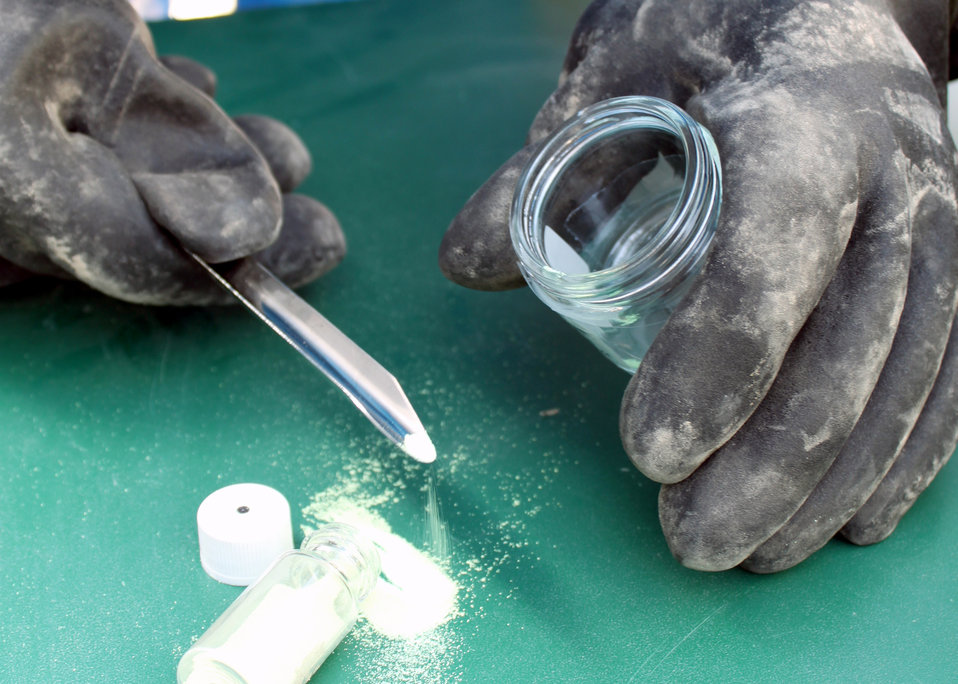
Emergency management

Senior Airman Nathan Krajcirik takes a sample of an unknown powder during training Aug. 3, 2010, at Joint Base Balad, Iraq. Different powders, pastes, liquids and aerosols are frequently used in training, so that during a real-world incident Emergency management Airmen are able to put their training to use. Airman Krajcirik is a 332nd Civil Engineer Squadron Emergency Management Section technician.